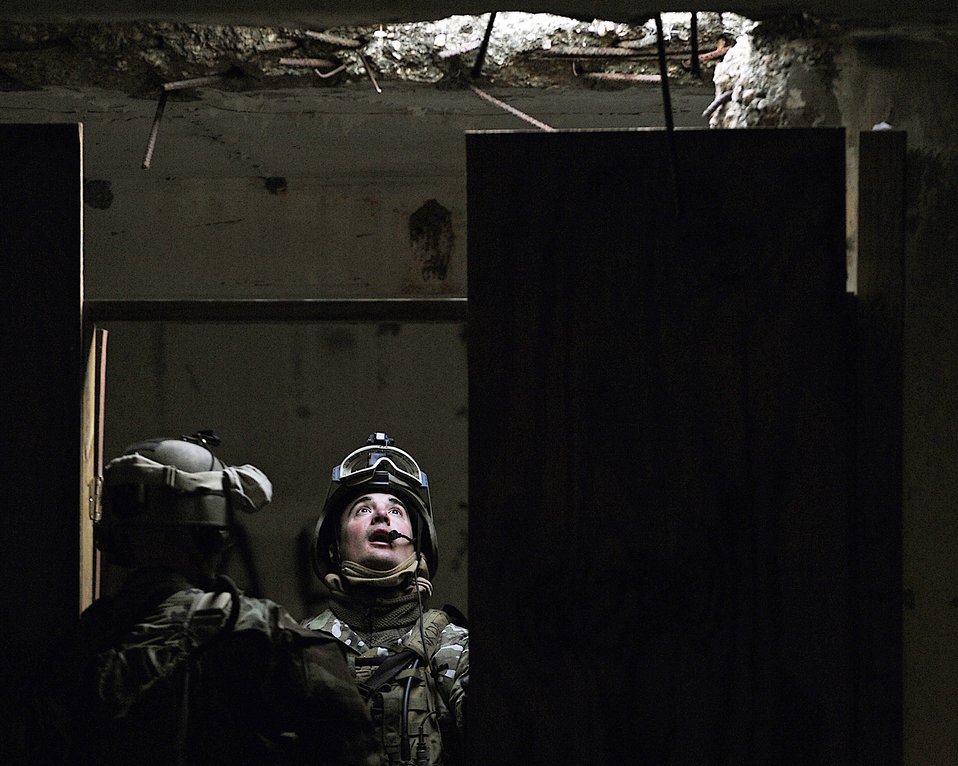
Waiting for the signal

As he